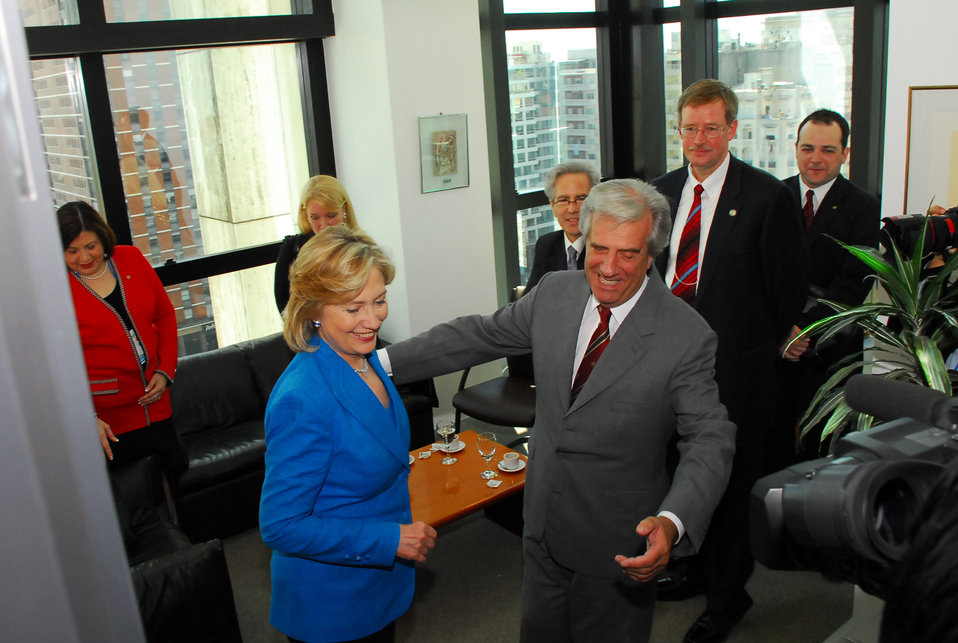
Secretary Clinton Meets With Uruguay President

U.S. Secretary of State Hillary Clinton and Uruguay President Tabaré Vázquez after their private meeting in Montevideo, Uruguay March 1, 2010.